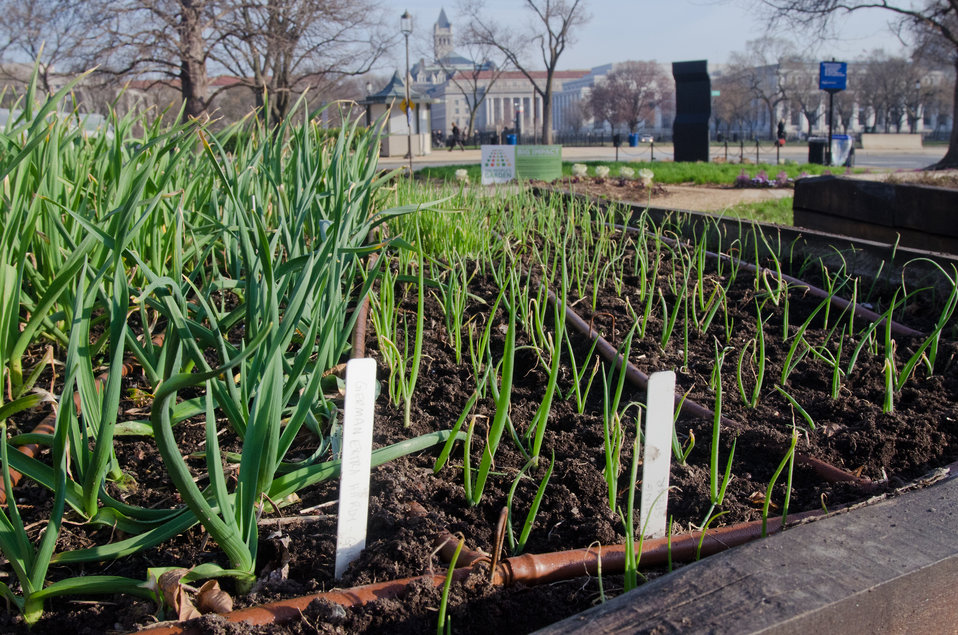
Blossom and German Extra Hardy garlic are some of the garlic varieties in this raised bed garden, equipped with drip watering system at the People's Garden at the U.S. Department of Agriculture (USDA), Washington D.C., on Thursday, March 17, 2011. Volunteers pitch in several times a week, to weed, mulch, plant, water and what ever it takes to grow a wide variety of produce. Although a few are ornamental, most are destined for charity kitchens. Located on the corner of Jefferson Drive, SW and 12th St. SW, people often stop to ask questions about the garden. Part of the volunteers’ training is to be a spokesperson for the People's Garden Initiative, an effort by the USDA that challenges its employees to establish People's Gardens at USDA facilities worldwide or help communities create gardens. People's Gardens vary in size and type, but all have a common purpose - to help the community and the environment.